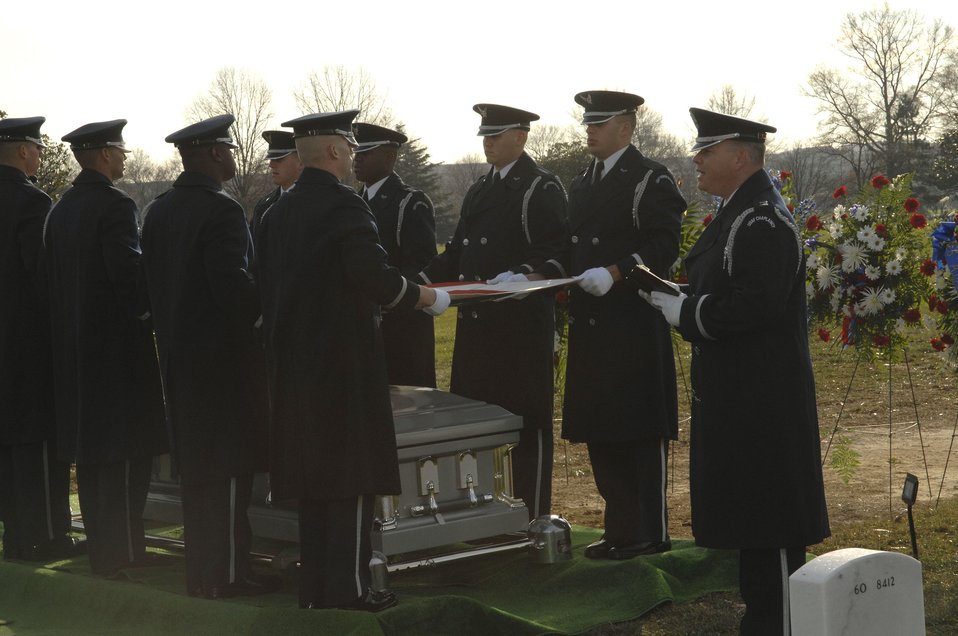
Honor guard lays to rest Airmen killed in Iraq Honor guard lays to rest Airmen killed in Iraq

Chaplain (Capt.) Kenneth Fisher delivers a eulogy for Capt. Kermit Evans during his funeral as the Air Force Honor Guard prepares to fold the American flag Dec. 12 at Arlington National Cemetery. More than 200 friends and relatives gathered to pay their respects to Captain Evans, a member of the 27th Civil Engineering Squadron Explosives Ordnance Disposal Flight at Cannon Air Force Base, New Mexico. He was deployed to Iraq when the helicopter he was a passenger in made an emergency landing and crashed.